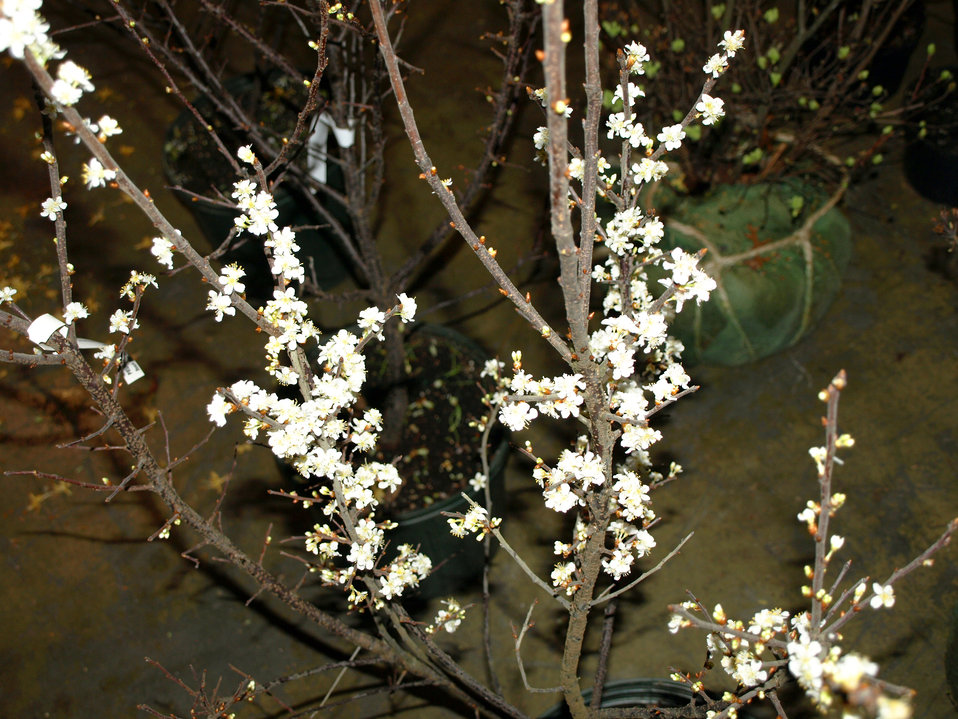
Beach plum

Prunus maritima (Beach plum), a native plant

Learn more about EPA’s Exhibit at the 2010 Philadelphia International Flower Show:
www.epa.gov/reg3esd1/garden/flower show.htm
www.epa.gov/reg3esd1/garden/flower show plants.htm
www.epa.gov/reg3esd1/garden/pdf/flowershow2010.pdf (6 pp, 864K)